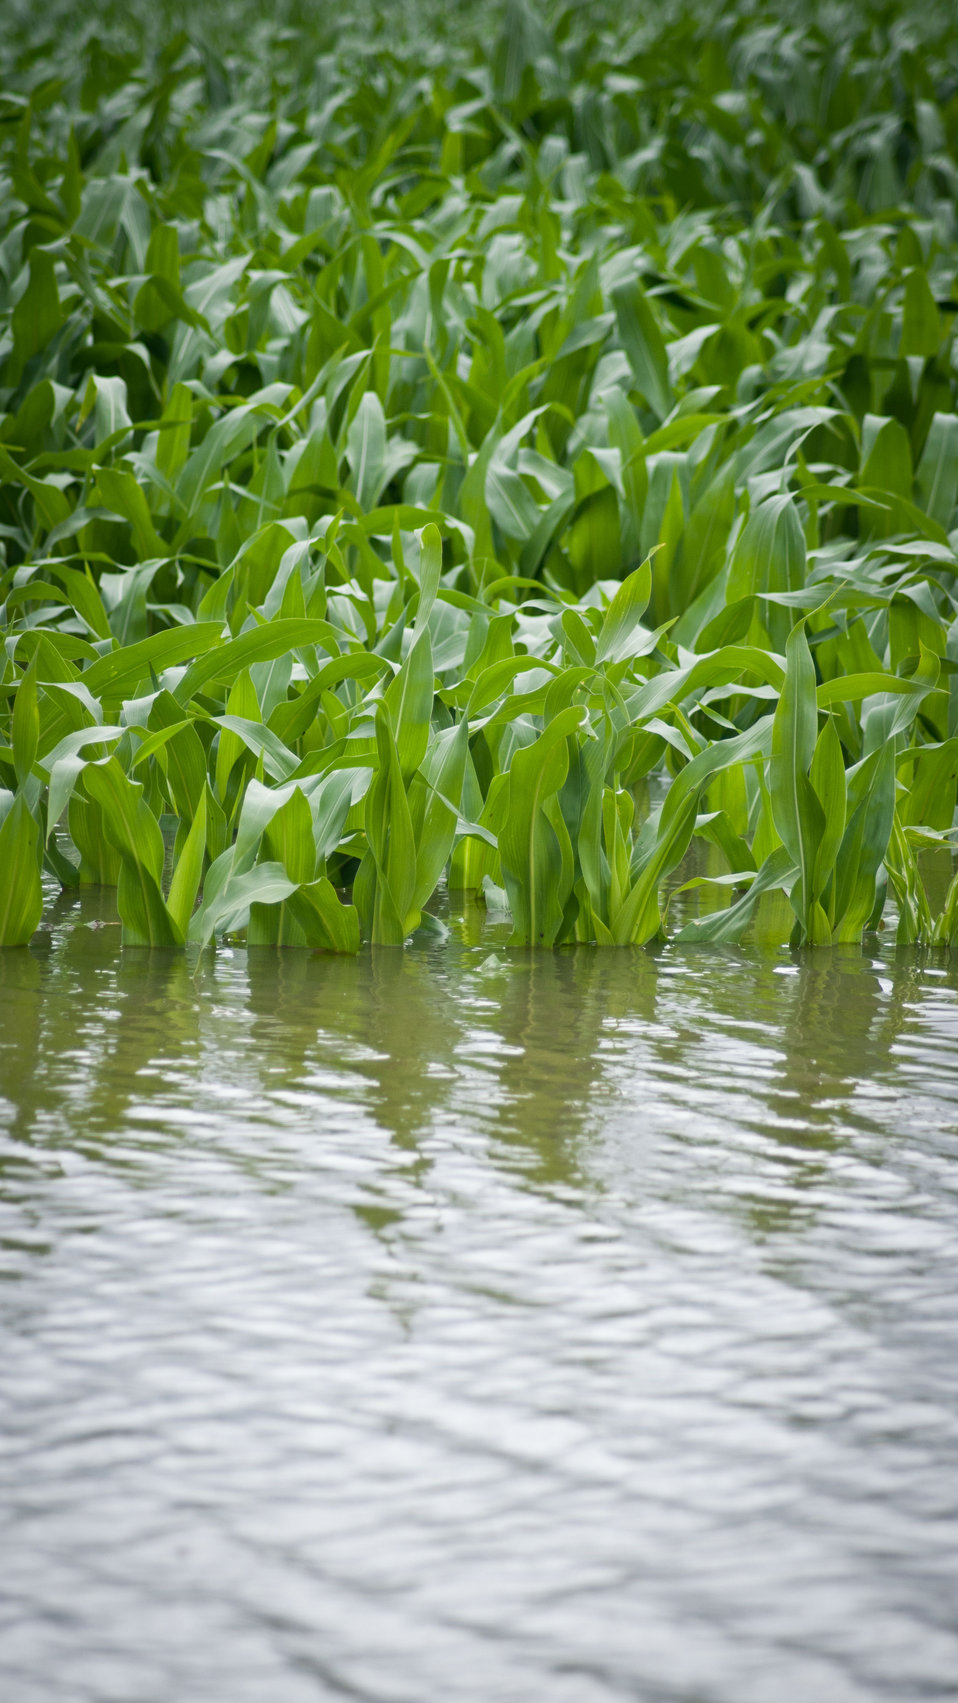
Mississippi River floodwaters have pushed into Yazoo River and into this cornfield near Yazoo City, MS, on Monday, May 16. 2011.